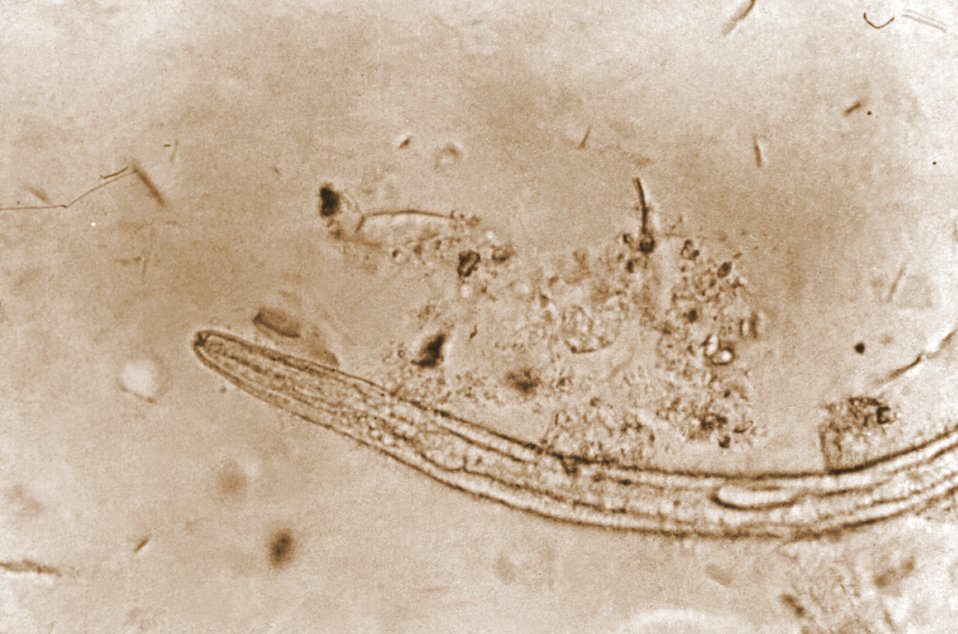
This photomicrograph depicts a close view of the head region of an infective, third-staged filariform larvae (L3) of a parasitic Strongyloides stercoralis nematode.